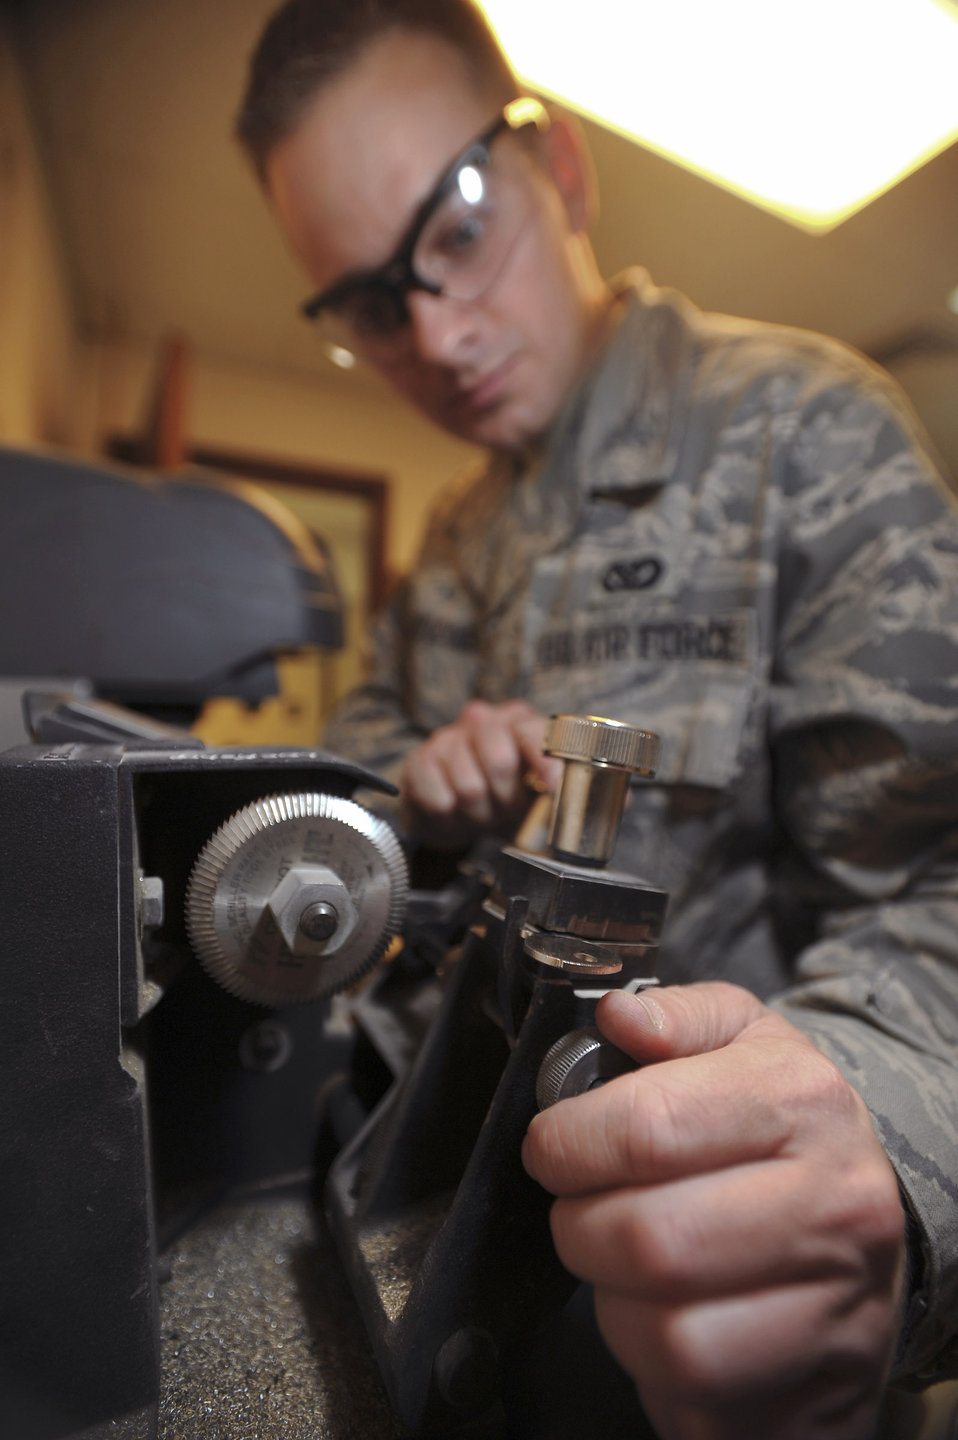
The key masters

Senior Airman Jesse Testudine loads and adjusts the master and blank in a key cutting machine to make a key for a customer Feb. 25 at an air base in Southwest Asia. Airman Testudine and fellow locksmiths make an estimatedn 430 keys a month for new personnel, new building structures and to replace lost keys. Airman Testudine is a locksmith with the 379th Expeditionary Civil Engineer Squadron, and is deployed from Misawa Air Base, Japan.